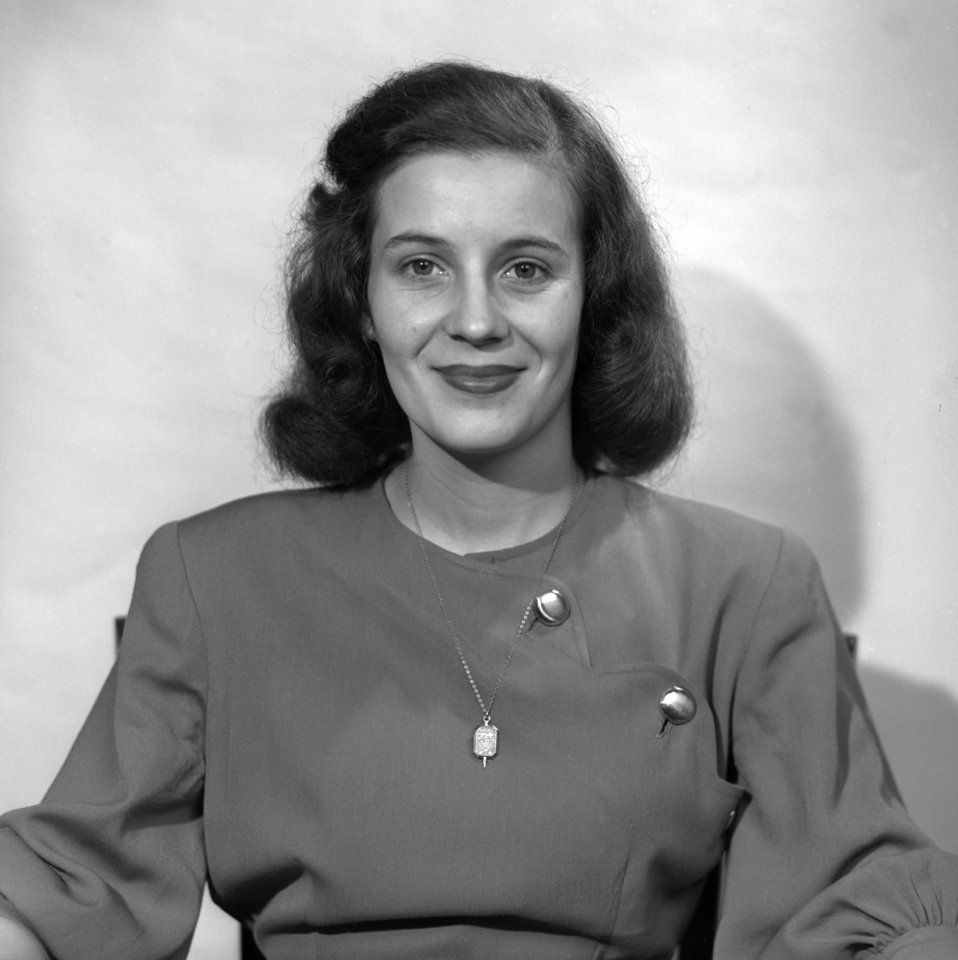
Lois Munger Oak Ridge

3227-2 DOE photo by Ed Westcott 1-8-1946 Oak Ridge Tennessee